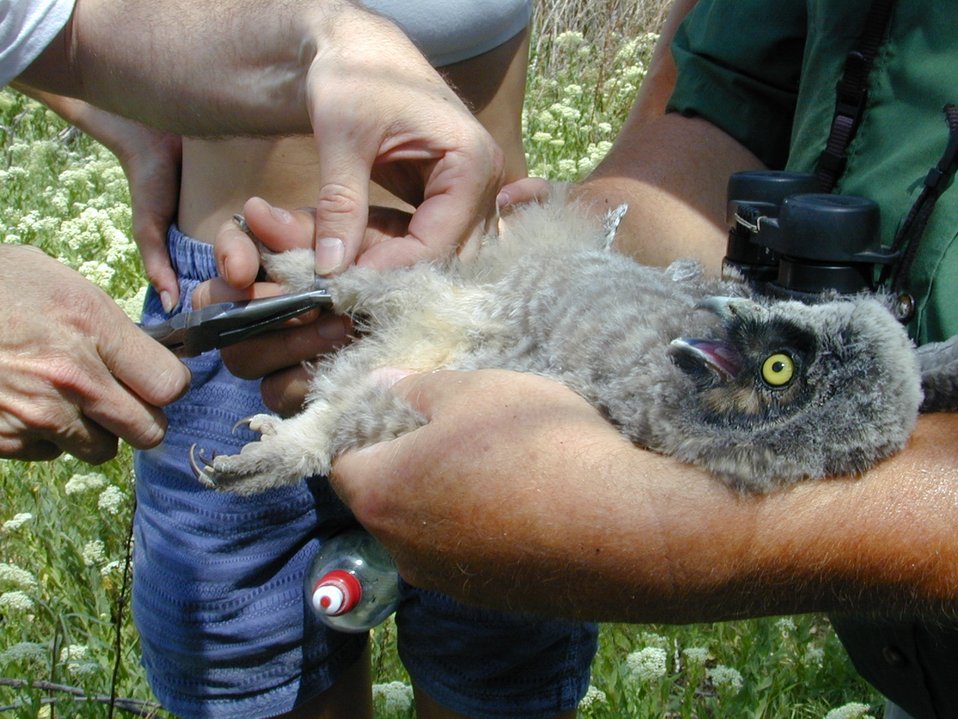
Environmental Education Fire Workshop Timberline High School Fall 2000